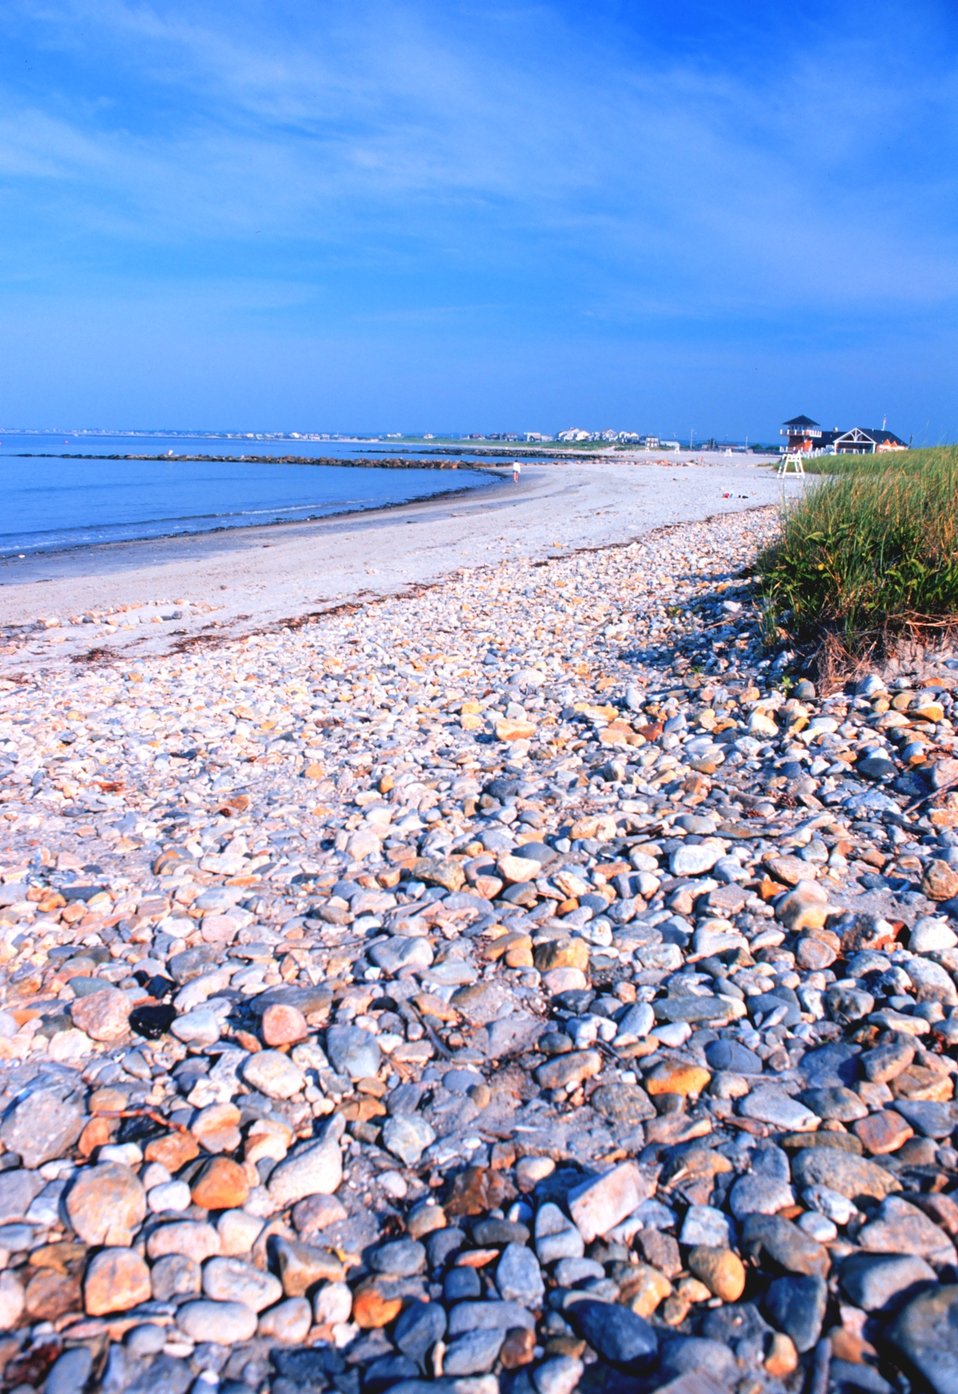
A pebble and sand beach near the port of Galilee